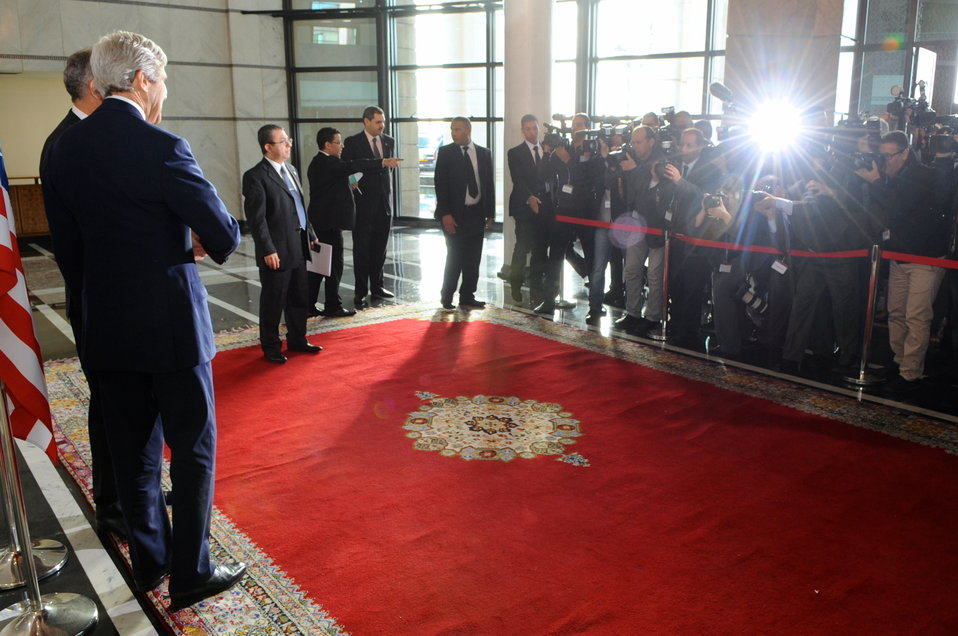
Secretary Kerry and Moroccan Foreign Minister Pose for Photographers in Rabat

U.S. Secretary of State John Kerry and Moroccan Foreign Minister Salaheddine Mezouar pose for a bank of photographers before the start of a Strategic Dialogue between their two countries at the Ministry of Foreign Affairs in Rabat, Morocco on April 4, 2014.